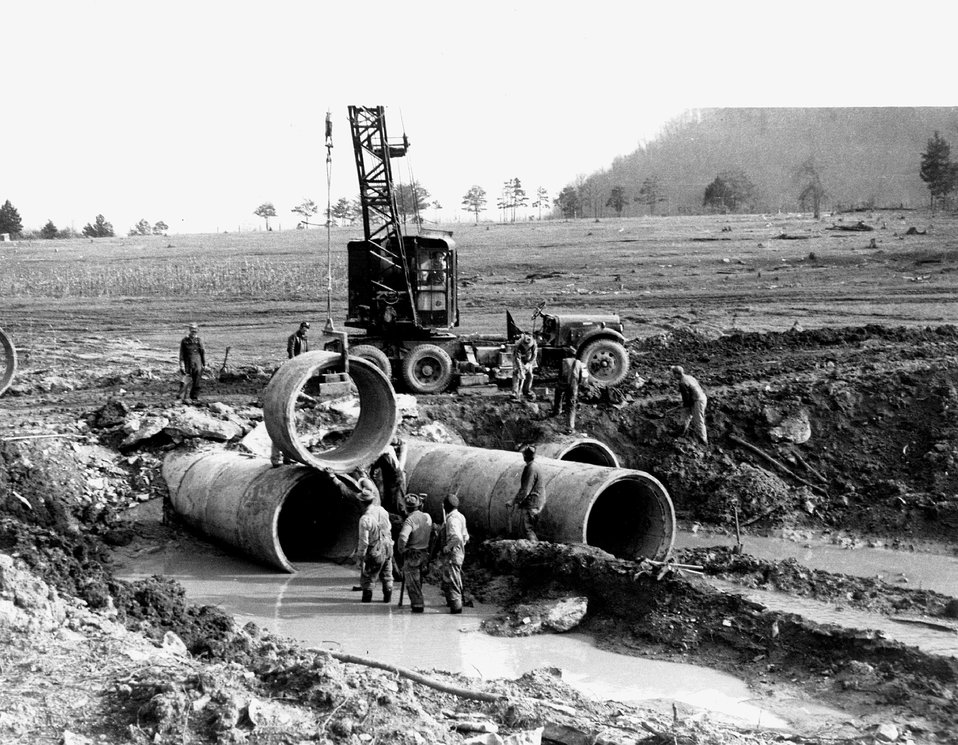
Early Construction. c. 1943